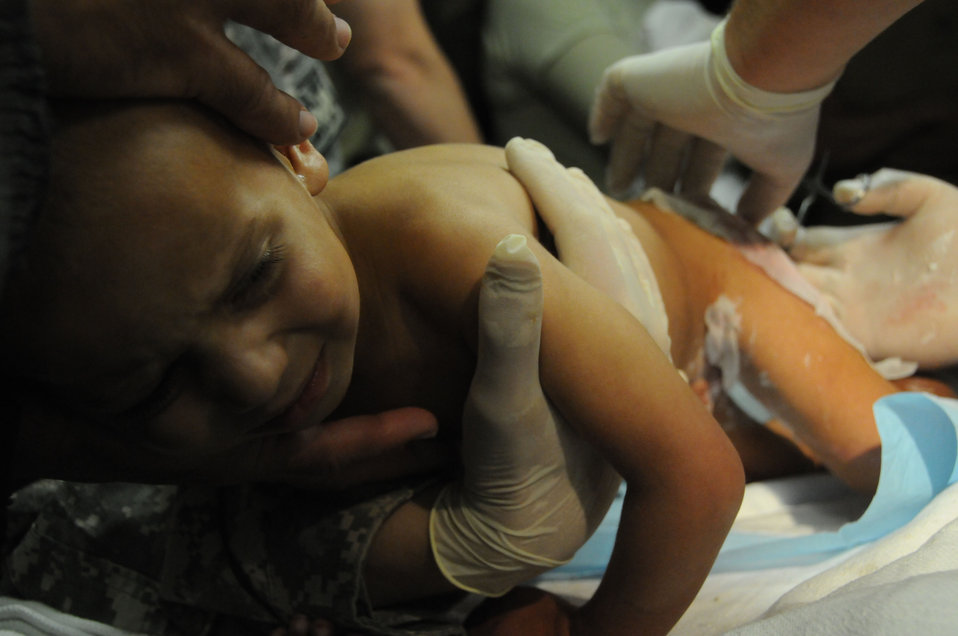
Innocent victims

Abdul Wali, 2-yrs-old, cries as his 2nd degree deep tissue burns are being treated by Maj. Andrew Kupnowowicz, orthopedic surgeon, on Forward Operating Base Ghazni, Afghanistan. Abdul Wali was brought to FOB Ghazni from Ajiristan for treatment on 2nd degree deep tissue burns to his buttocks and thighs.